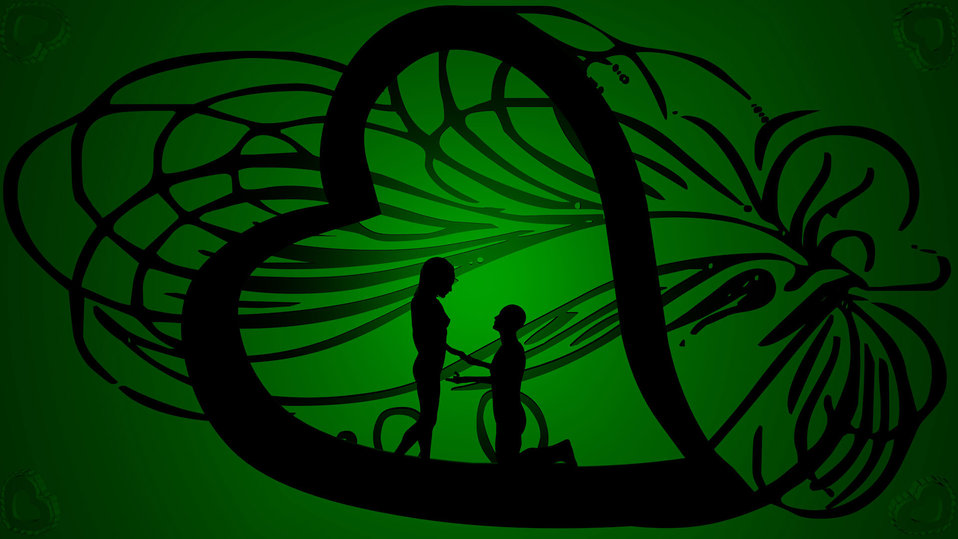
Engagement illustration.